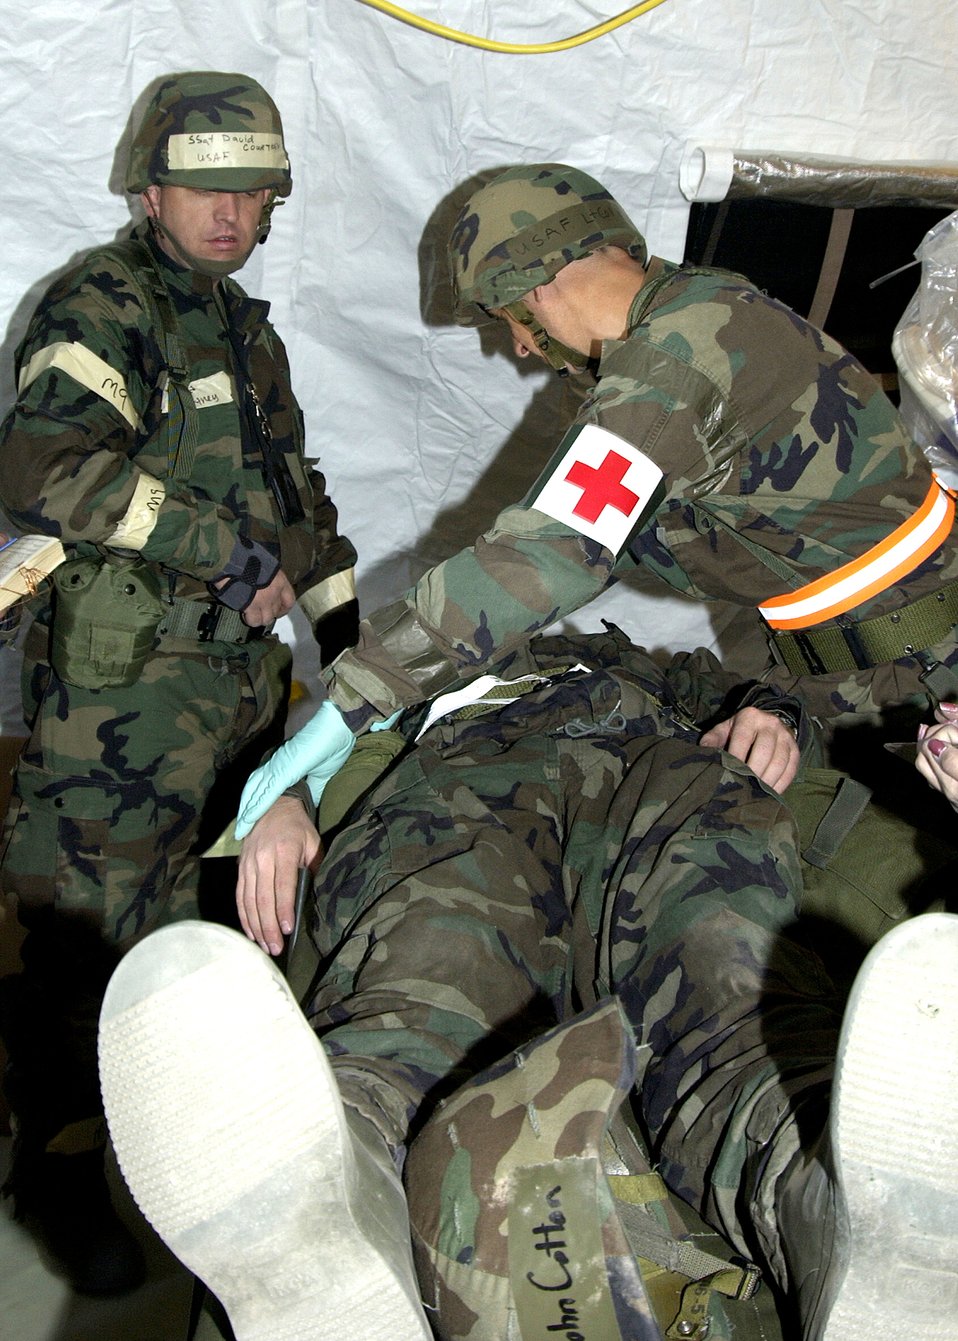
Treating the wounded

DAVIS-MONTHAN, Ariz. (AFPN) -- 1st Lt. John Cotton receives medical attention for a simulated head wound from Lt. Col. Gary Hurwitz and other members of the 355th Medical Group during exercise Bushwhacker 06-01 here.